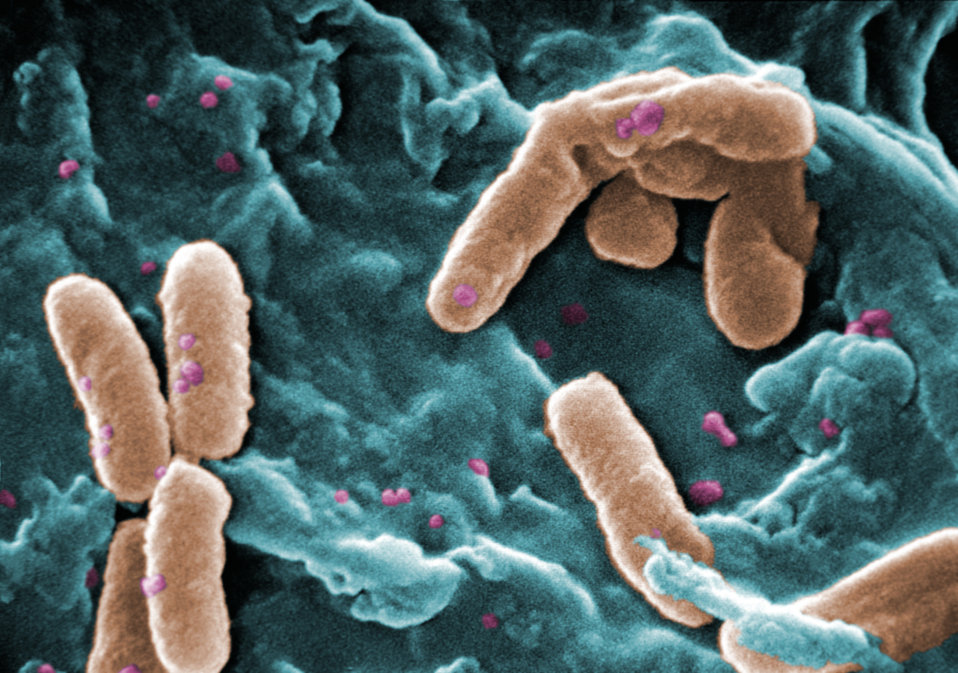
This colorized version of PHIL 232 depicts a scanning electron micrograph (SEM) of a number of Pseudomonas aeruginosa bacteria.